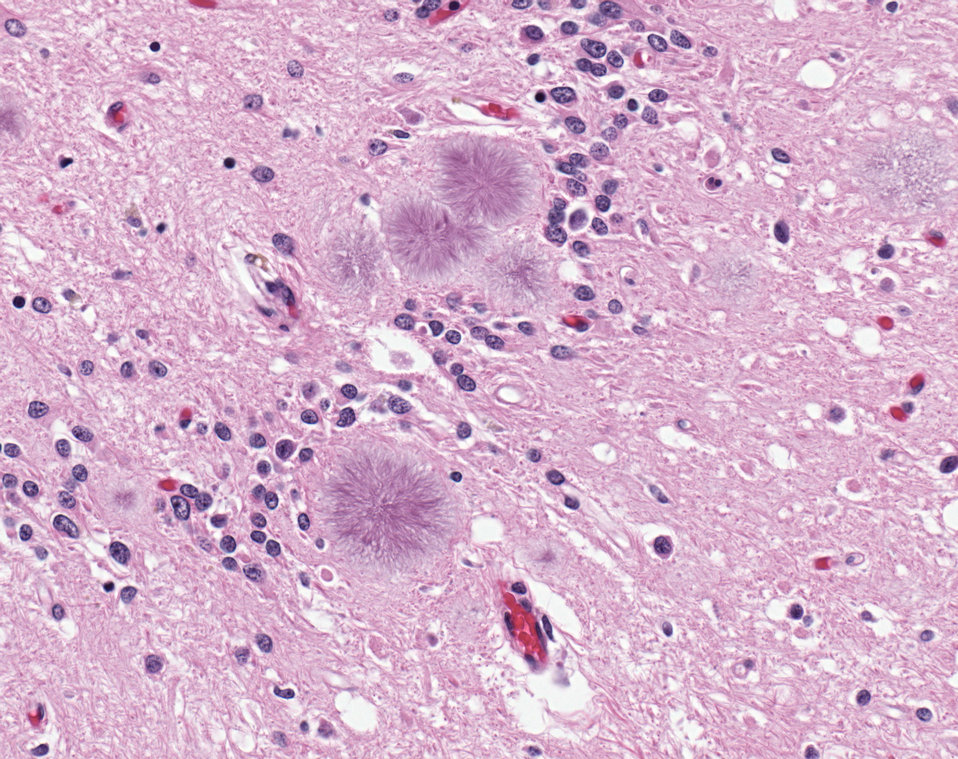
Magnified 158X, and stained with H&E (hematoxylin and eosin) staining technique, this light photomicrograph of brain tissue reveals the presence of typical amyloid plaques found in a case of variant Creutzfeldt-Jakob disease (vCJD). Note that the plaques vary in size, and consist of a hyaline eosinophilic core with a peripheral margin of radiating fibrils surrounded by a pale halo.